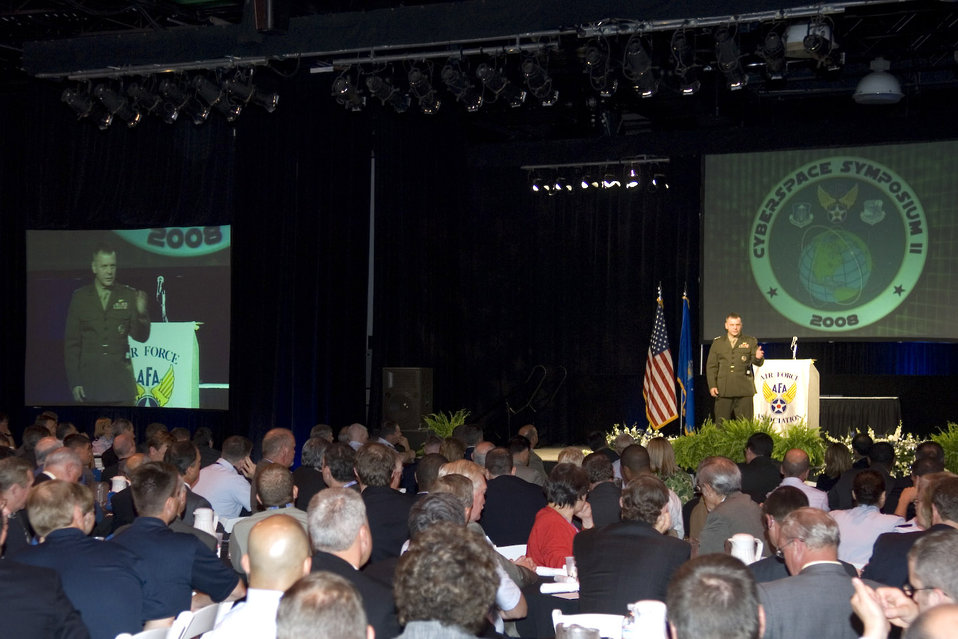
JCS vice chairman: break service barriers

Gen. James E. Cartwright, vice chairman of the Joint Chiefs of Staff, addresses attendees June 19 at the second annual Air Force Cyberspace Symposium in Marlborough, Mass.